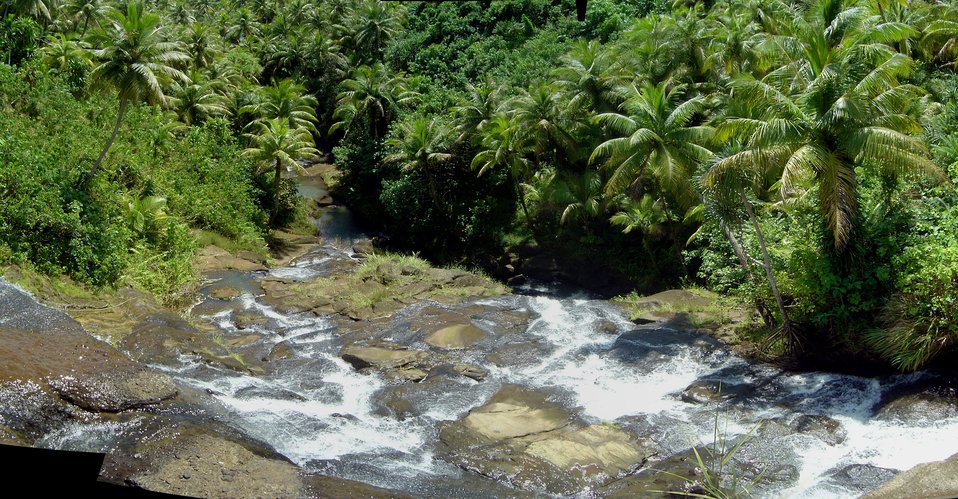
Inajaran Falls in the interior of Guam.